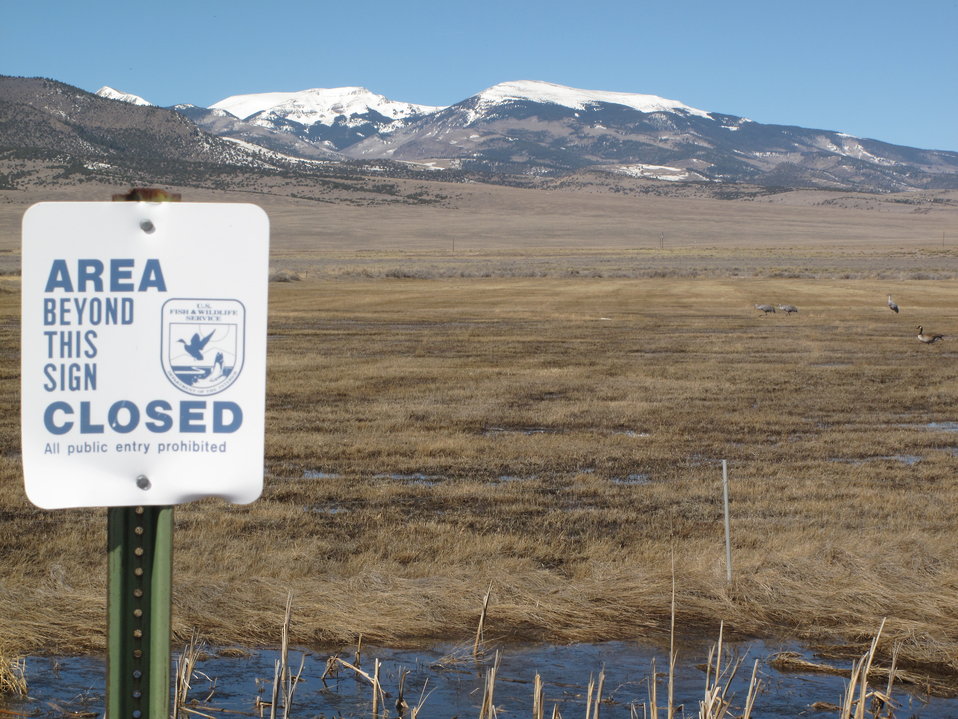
Monte Vista NWR Hosting Cranes

The Monte Vista National Wildlife Refuge serves as a stopover point for cranes during their northward and southward migrations each year. The birds using the Refuge nest primarily in Montana, Idaho and Wyoming and spend winters in New Mexico, Arizona, and Mexico. However, some cranes that visit the Refuge may nest as far away as Alaska and western Siberia.